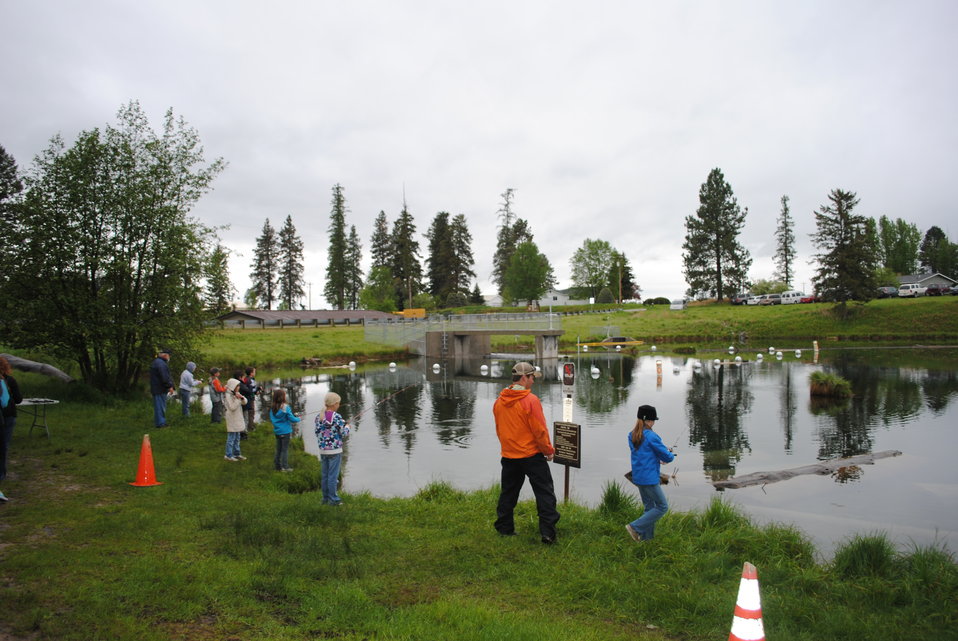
Casting at the Creston National Fish Hatchery

Brian Ham shows third graders how to cast for fish during the annual Fish Fun Fair at the Creston National Fish Hatchery

Credit: Evie Bradley / USFWS

Photo Contest Entry #108